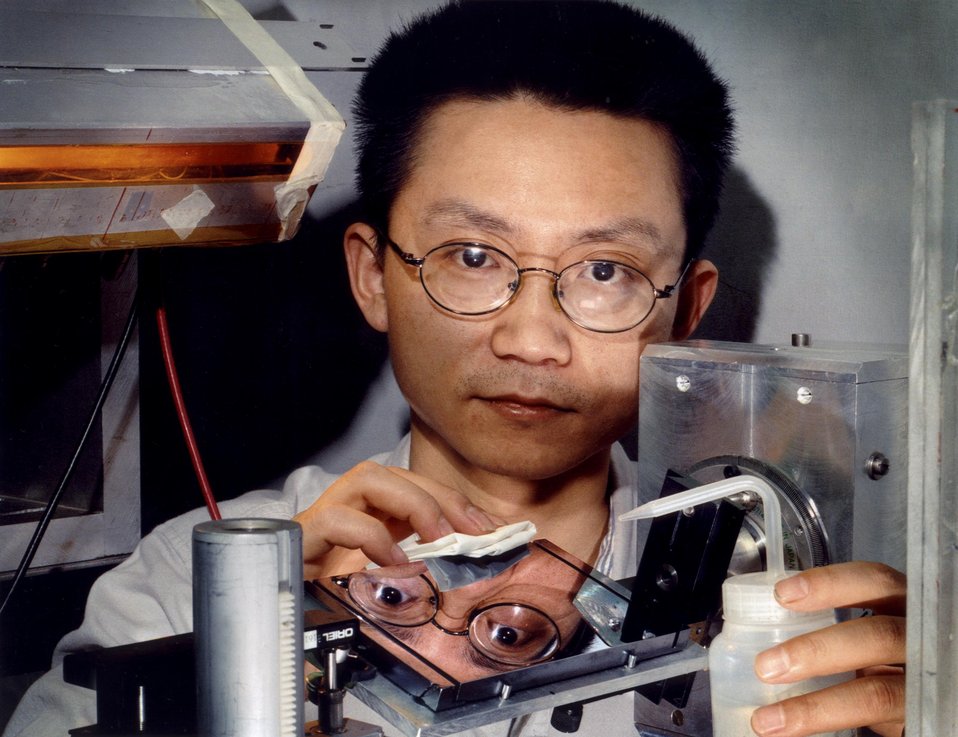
DIFFRACTION-ENHANCED IMAGING, X-RAY TECHNIQUE TO STUDY CALCIFICATION OF BREAST TISSUE.

THIS METHOD COMPARED TO X-RAYS USED IN MAMMOGRAPHY, SIGNIFICANTLY IMPROVES PICTURES OF BREAST TISSUE. CALCIFICATIONS ARE ASSOCIATED WITH BREAST CANCER, AND EARLY DETECTION IS CRUCIAL.